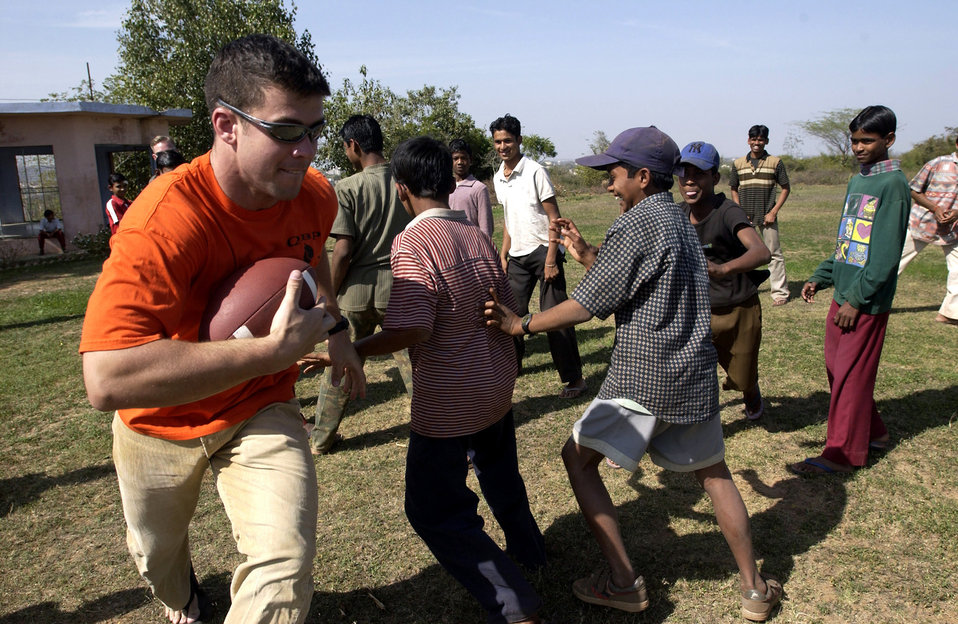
Cultural awareness

GWALIOR, India -- Capt. Jeffery Mohr teaches an Indian boy how to play football at a local orphanage during a recent trip to donate toys and supplies to the children. About 130 airmen from Elmendorf Air Force Base, Alaska, are here for Cope India '04, a bilateral exercise with the Indian air force. Captain Mohr is an F-15 Eagle pilot with the 19th Fighter Squadron at Elmendorf.